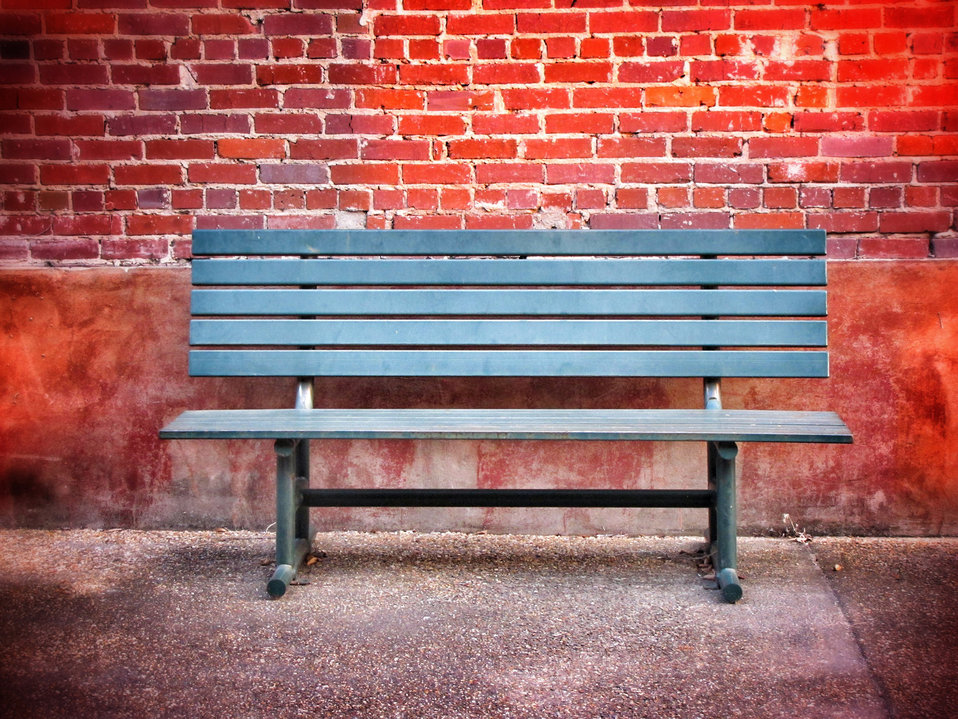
Bench in a park.